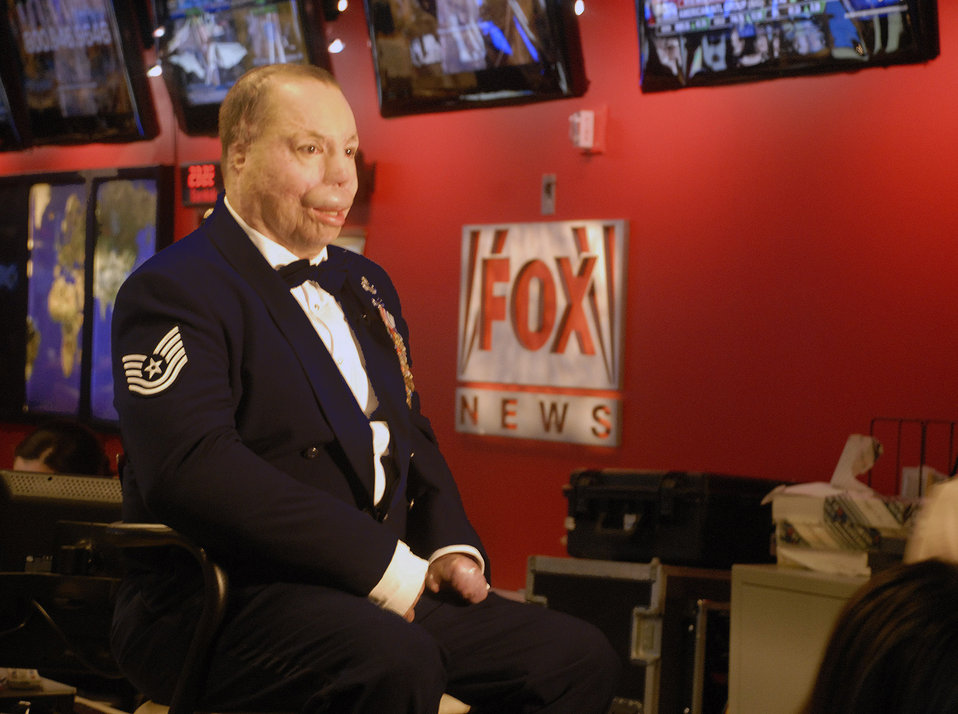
General, NCO talk about warrior care on national TV

Tech. Sgt. Israel Del Toro talks about